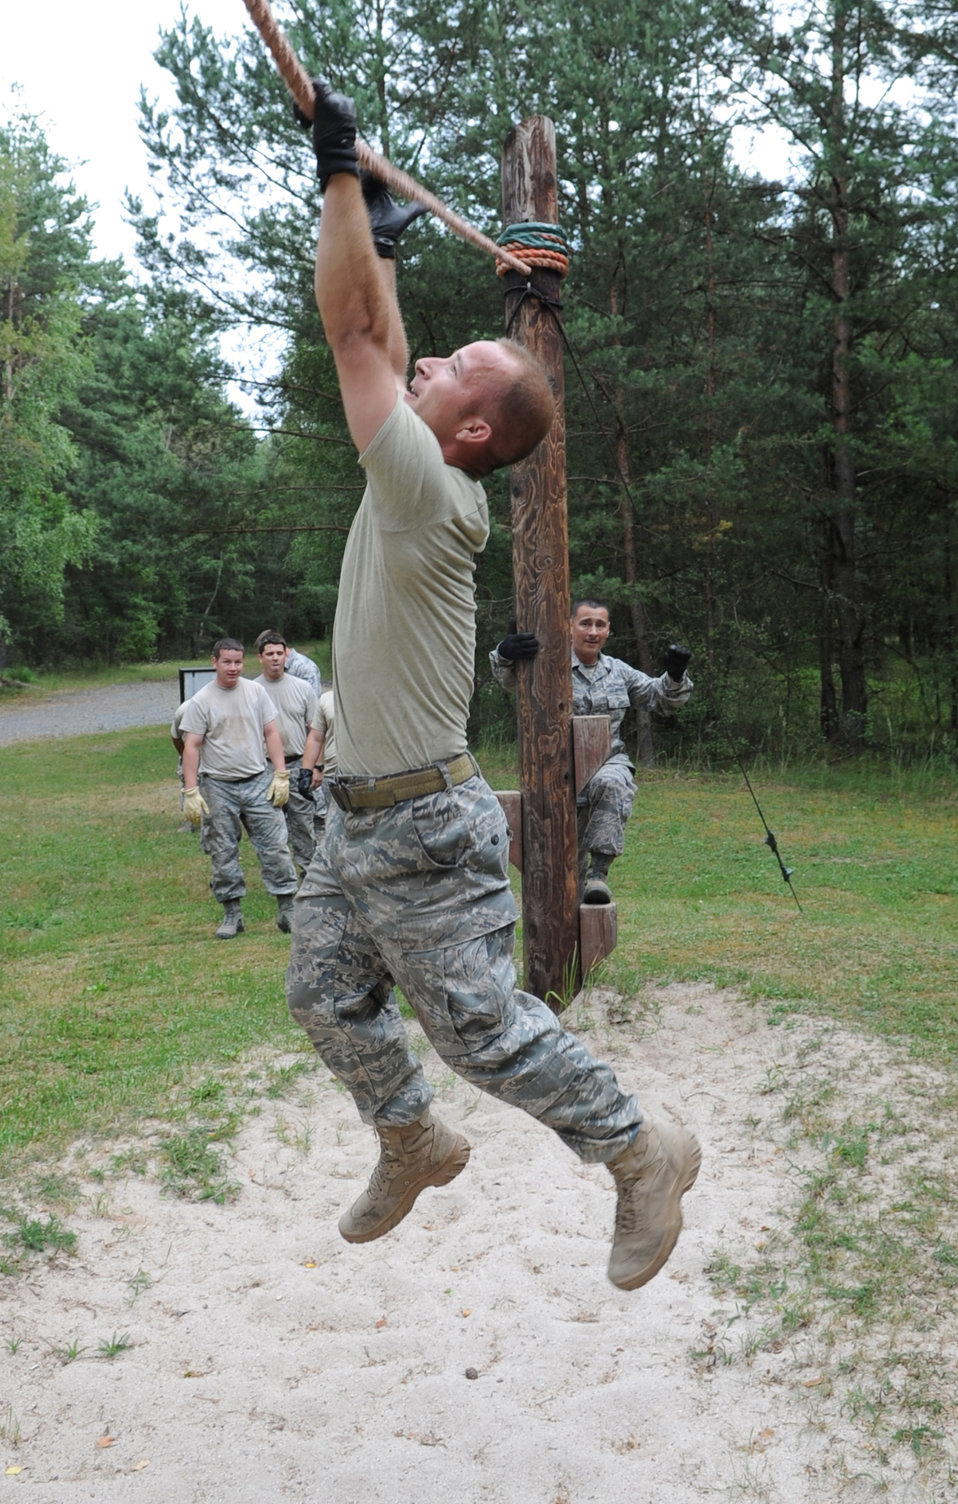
Exercise Allied Strike 2010

Staff Sgt. Till Schanz attempts to complete an obstacle during Exercise Allied Strike 10 July 23, 2010, in Grafenwoehr, Germany. Sergeant Schanz is assigned to the 4th Air Support Operations Squadron power productions flight.